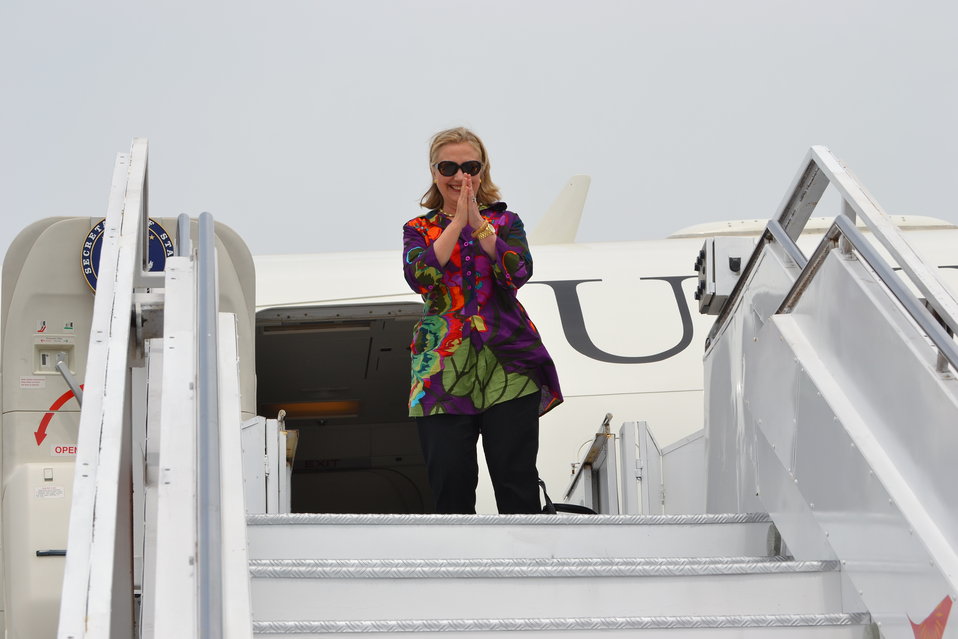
Secretary Clinton Says Goodbye to Chennai

U.S. Secretary of State Hillary Rodham Clinton says goodbye to Chennai as she gets back on her plane at Chennai Airport in Chennai, India, on July 21, 2011. [Paul Cohn/ State Department photo]